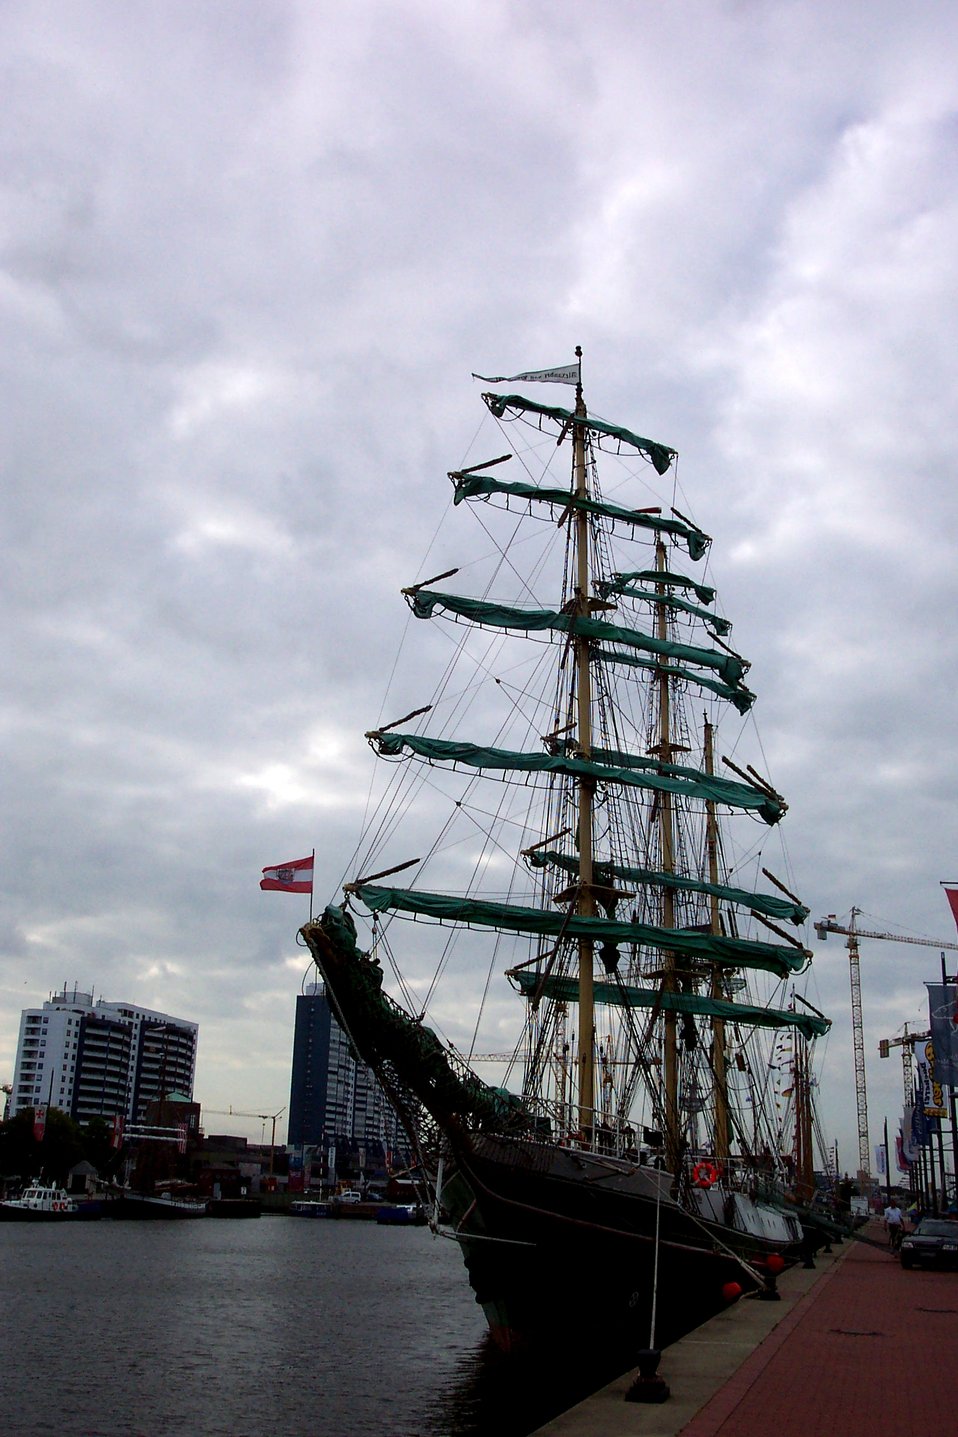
The sailing ship ALEXANDER VON HUMBOLDT.